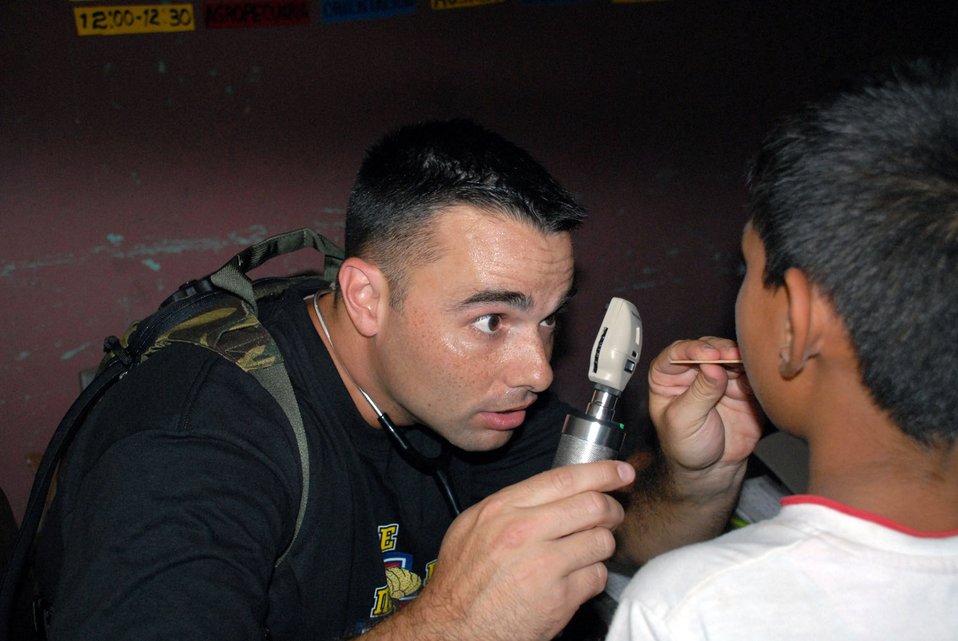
Medics provide care in Honduran villages

1st Lt. Damian Garza examines a patient during a medical readiness training exercise Oct. 19 in Cuesta de la Virgen, Honduras. This MEDRETE educated 785 Hondurans on preventive medicine issues such as hand washing, food preparation and personal hygiene. Of those 785, doctors examined 352 patients and the dentist treated 139 patients. Lieutenant Garza is a physician assistant with Joint Task Force-Bravo's Medical Element at Soto Cano Air Base, Honduras.